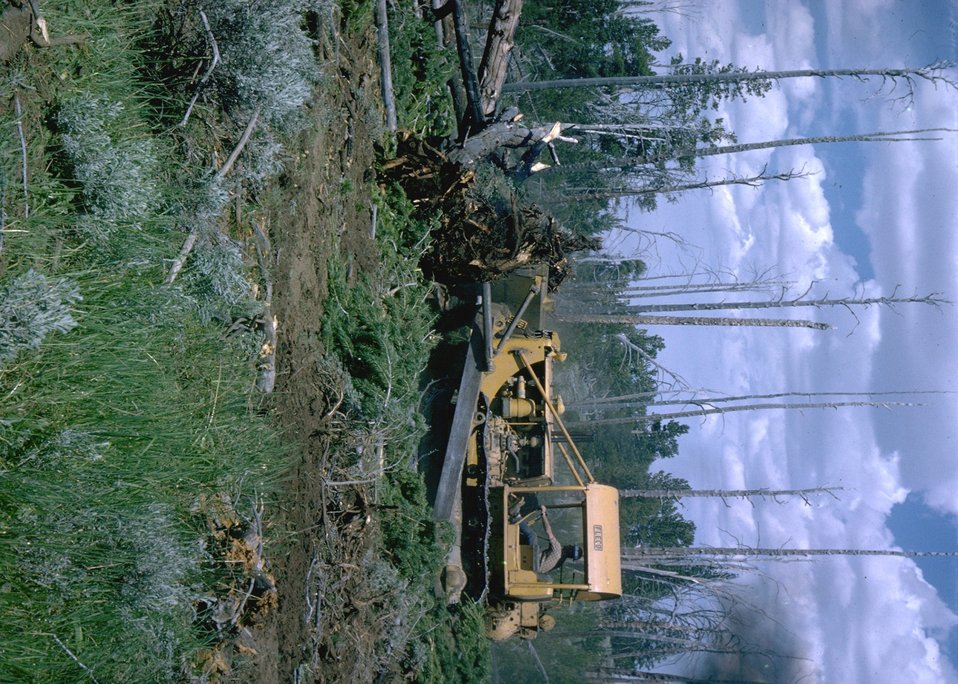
Bulldozing an area for construction.